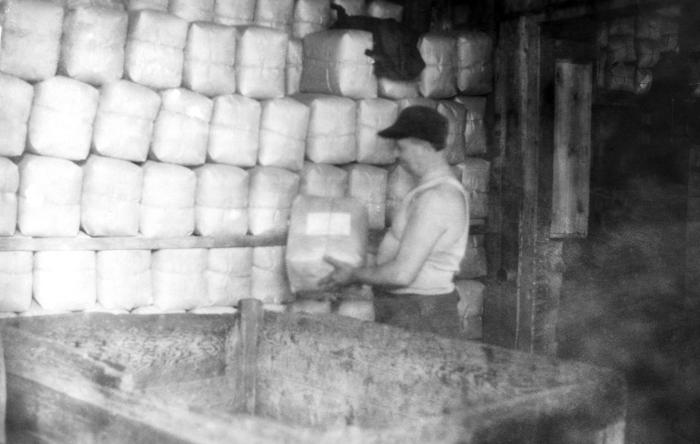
Provided by the Center for Disease Control's (CDC), National Institute for Occupational Safety and Health (NIOSH), this historic image depicted a Connecticut fur industry worker organizing bags of processed animal fur, which were being stored in paper bags along wall-mounted wooden shelving. Note that this man was not wearing a filtered breathing mask, gloves or goggles, though it cannot be determined from this image whether or not these protective accessories were necessary.